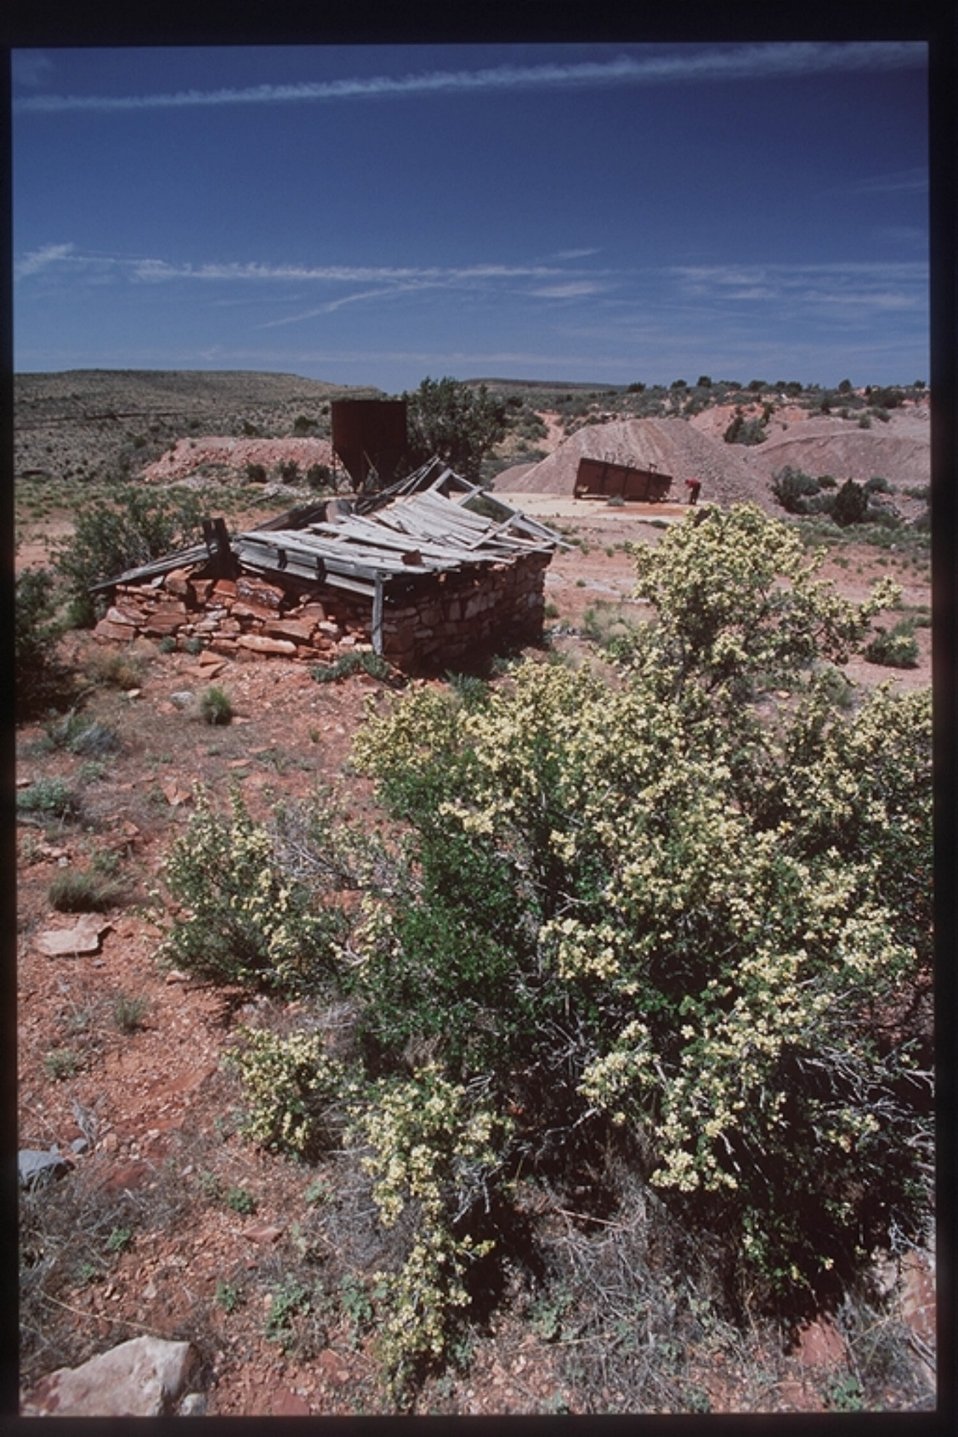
The Grand Canyon-Parashant National Monument was designated by President Clinton in January 2000. The monuments remote open, undeveloped area and engaging scenery is located on the edge of the Grand Canyon.